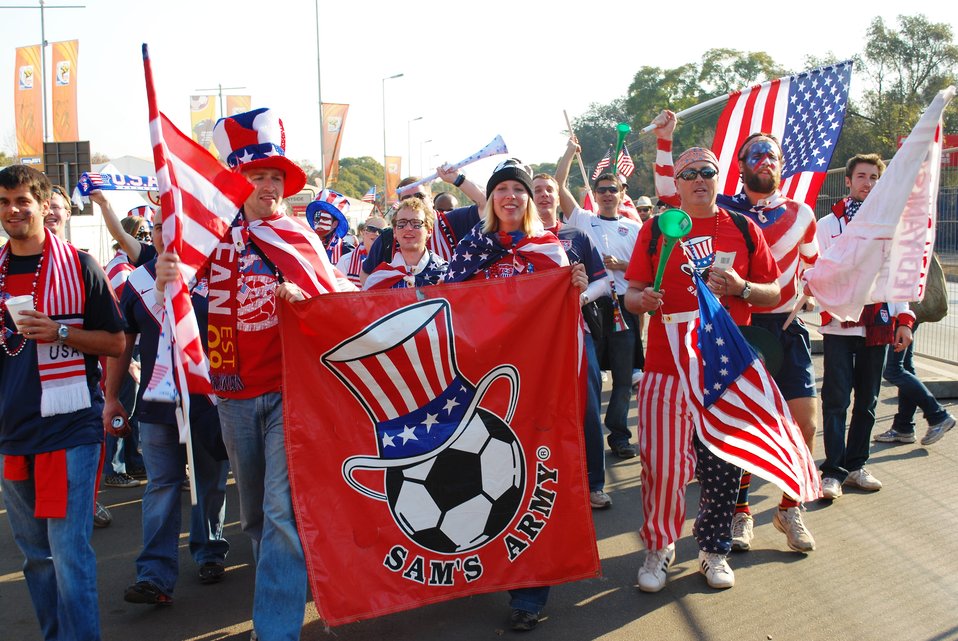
U.S. Fan Club, Sam’s Army, Walks to U.S. vs. Algeria World Cup Match

The U.S. fan club, Sam’s Army, walks to the U.S. vs. Algeria World Cup soccer match at Loftus Versfeld Stadium in Pretoria, South Africa, on June 23, 2010.